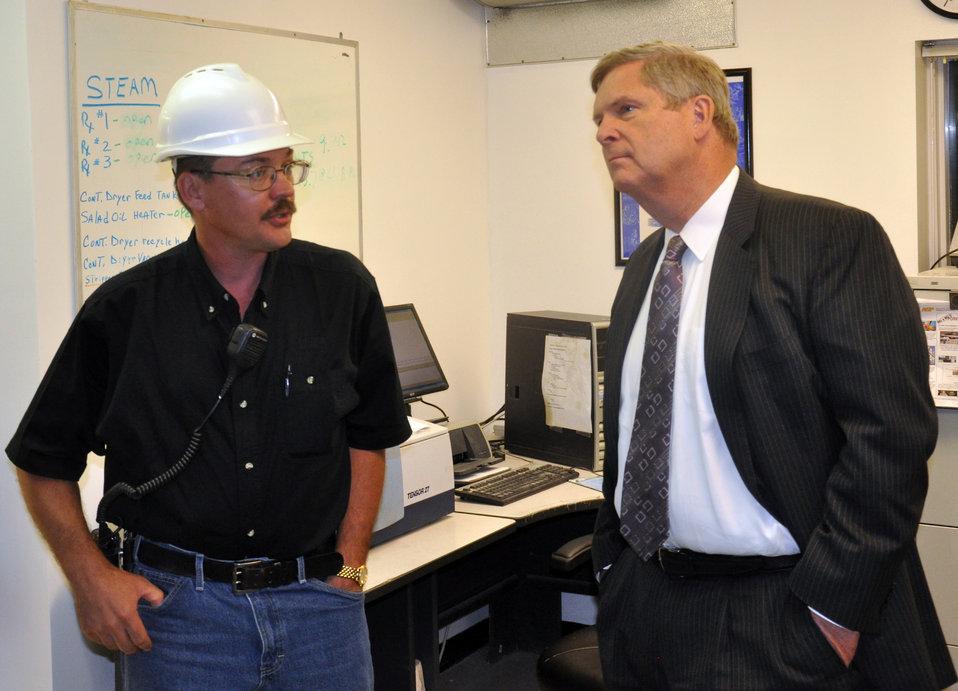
AGP biodiesel plant manager Kelly Croghan describes the employees jobs in the biodiesel plant’s control room to Agriculture Secretary Tom Vilsack during a brief tour of AGP’s operations in Sergeant Bluff, IA on Sept. 14, 2012.